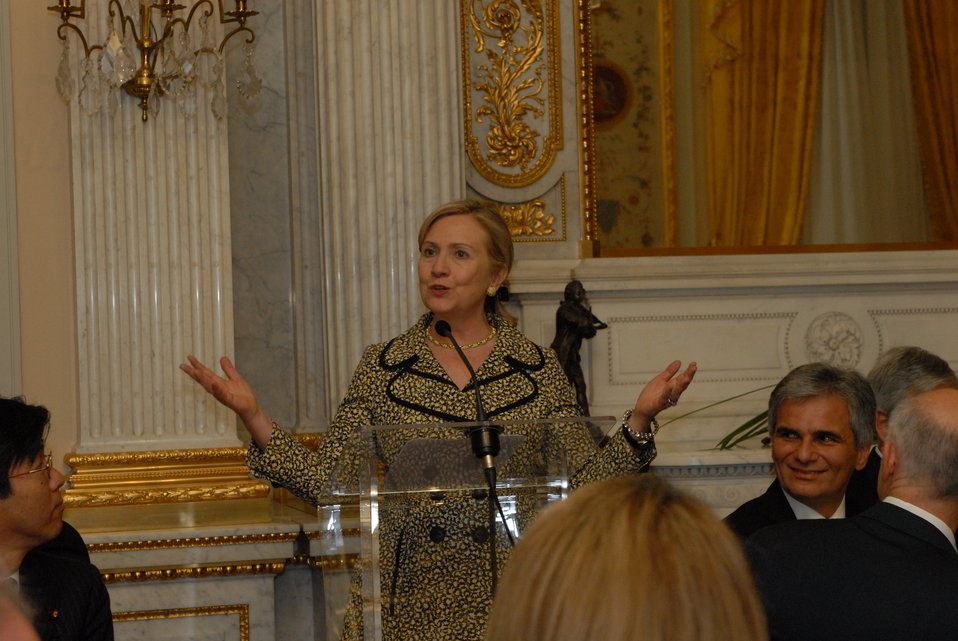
Secretary Clinton Hosts a Dinner for Heads of Delegation Participating in the OECD Ministerial Council Meeting

U.S. Secretary of State Hillary Rodham Clinton hosts a dinner for heads of delegation participating in the Organization for Economic Cooperation and Development (OECD) Ministerial Council Meeting, in Paris, France, on May 25, 2011.